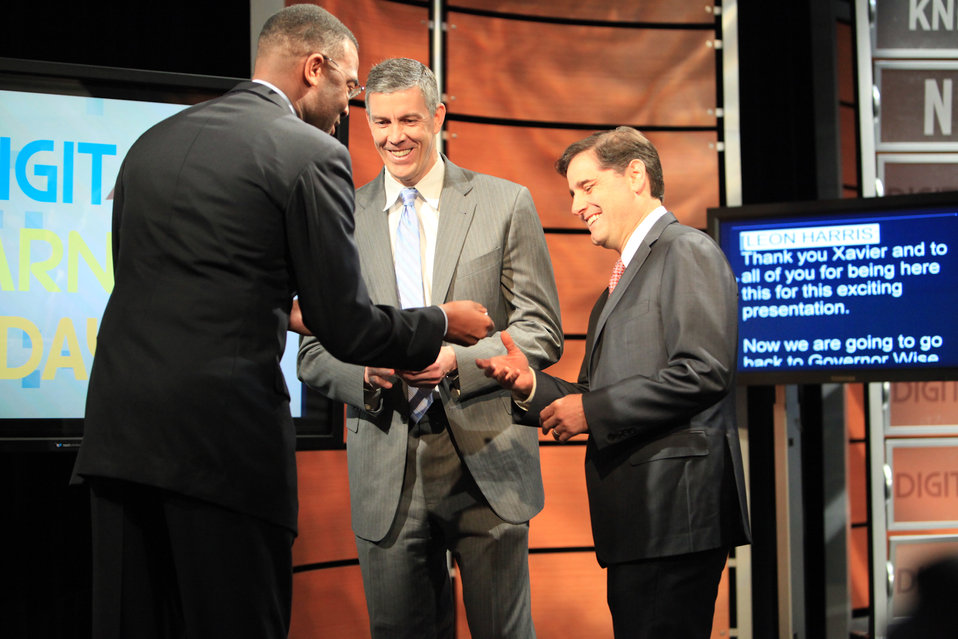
FCC Chairman Genachowski Receives a Thumbdrive at the Digital Learning Day Town Hall

FCC Chairman Genachowski given a thumbdrive at the Digital Learning Day Town Hall in Washington, DC, on February 1, 2012.